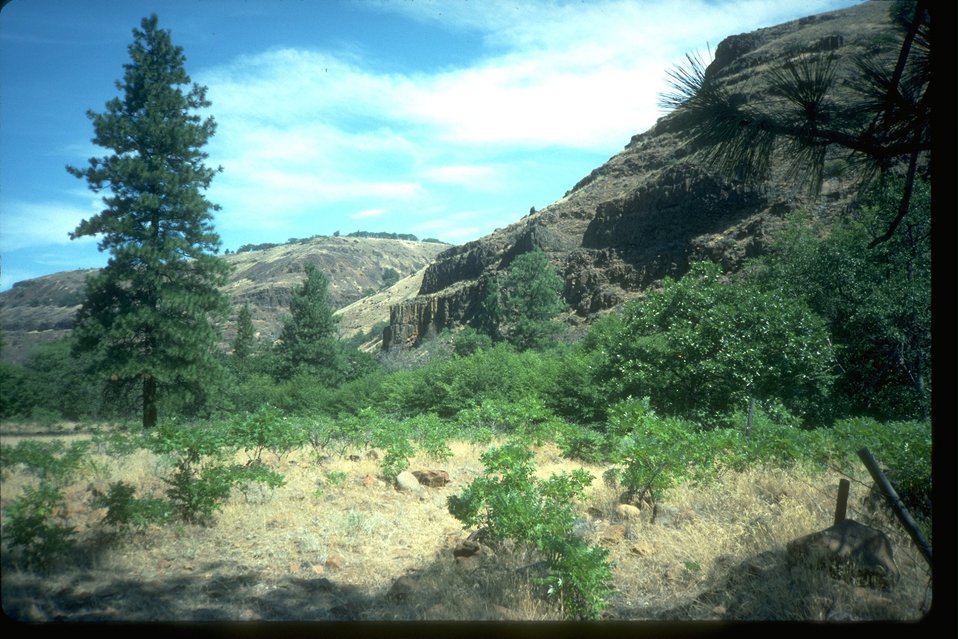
Rock Creek area in Klickitat County, Washington.